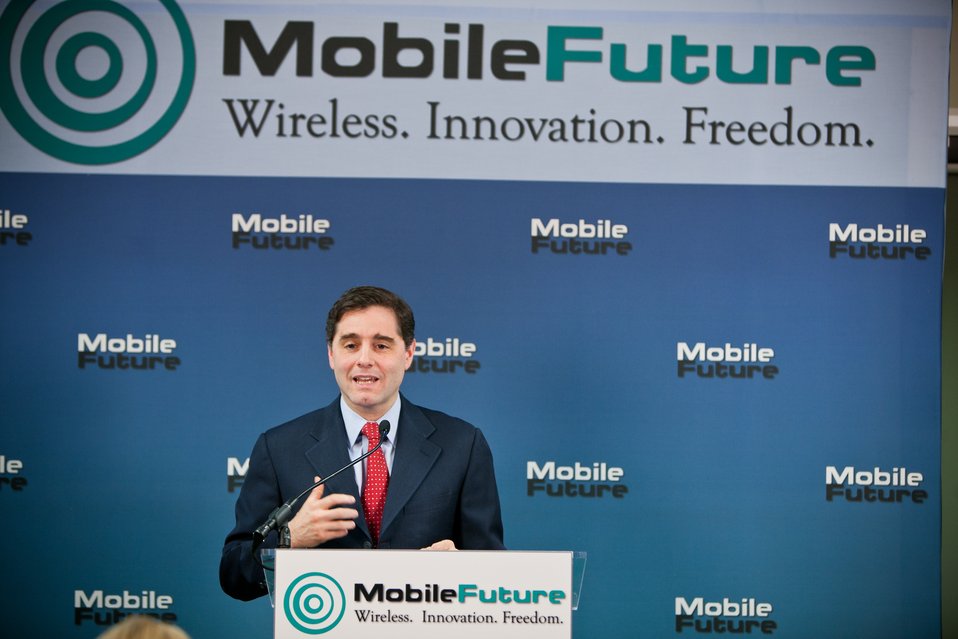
Genachowski Mobile Future Forum